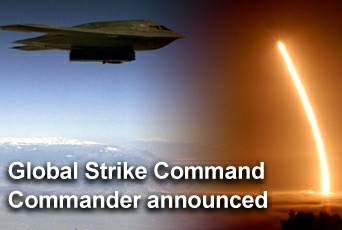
Commander chosen for Global Strike Command

Lt. Gen. Frank G. Klotz received Senate confirmation May 8 to become commander of the Air Force's newest major command, Air Force Global Strike Command. General Klotz, who currently serves as assistant vice chief of staff and Air Force Staff director, will take charge of the new command upon its formal activation.